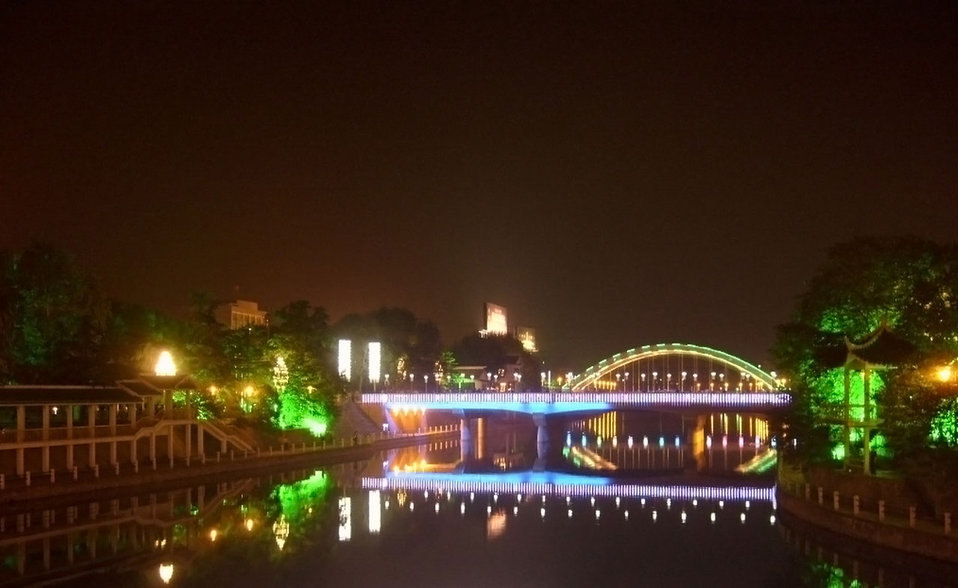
Canal at night hefei china.